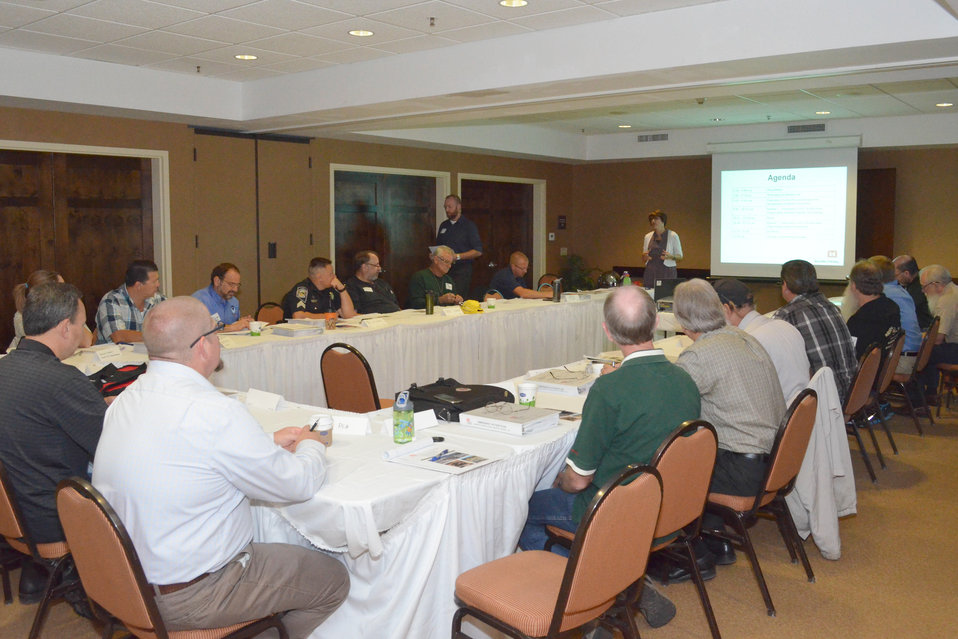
130918-A-QE425-005Corps conducts emergency response exercise at Martis Creek Dam

Representatives from the U.S. Army Corps of Engineers Sacramento District and other federal, state and local agencies gathered for an emergency response exercise Sept. 19, 2013, in Truckee, Calif., to walk through response protocols should a disaster occur at Martis Creek Dam. The exercise provided participants an opportunity to evaluate and improve emergency response plans associated with the dam. Each year, the Corps deploys hundreds of employees to respond to disasters around the world; sustaining lives with critical commodities; providing technical expertise; and assessing and restoring critical infrastructure.